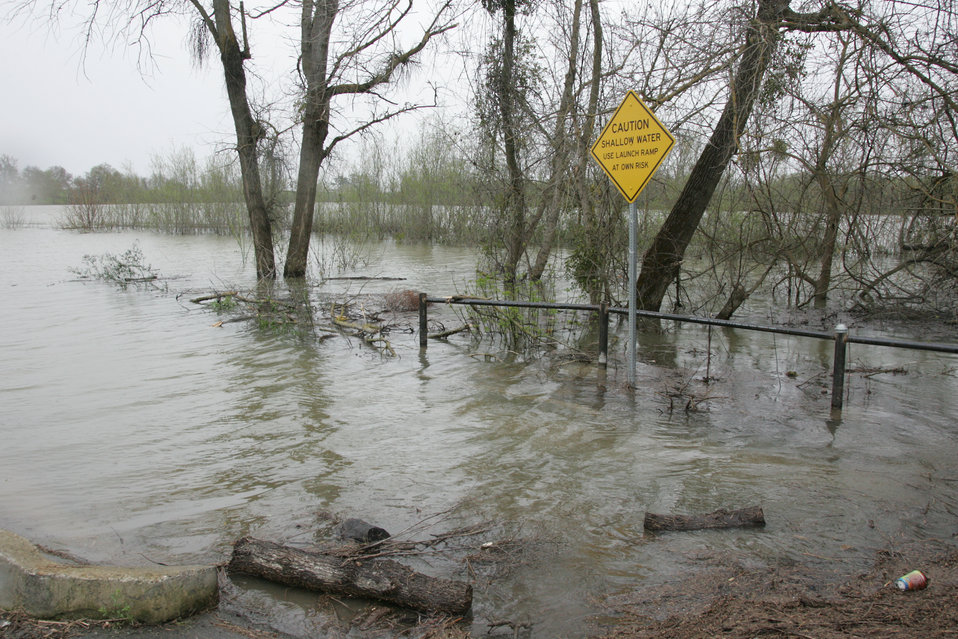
YUBA COUNTY, Calif. (March 24, 2001) --- A view of the high water levels on the Feather River near the recently completed setback levee at Star Bend in the Plumas Lake area here March 18. The U. S. Army Corps of Engineers Sacramento District is monitoring flood control projects in the Sacramento region as a series of rainstorms continue to heavily hit northern California. Construction of the Feather River setback levee began in 2008. It was completed in October 2009 by the Sacramento District, the Three Rivers Levee Improvement Authority and Teichert Construction. Levee maintenance and repair is the responsibility of local agencies. The Sacramento District continues to coordinate with the California Department of Water Resources and is ready to respond to flood emergencies if the state requests federal assistance.